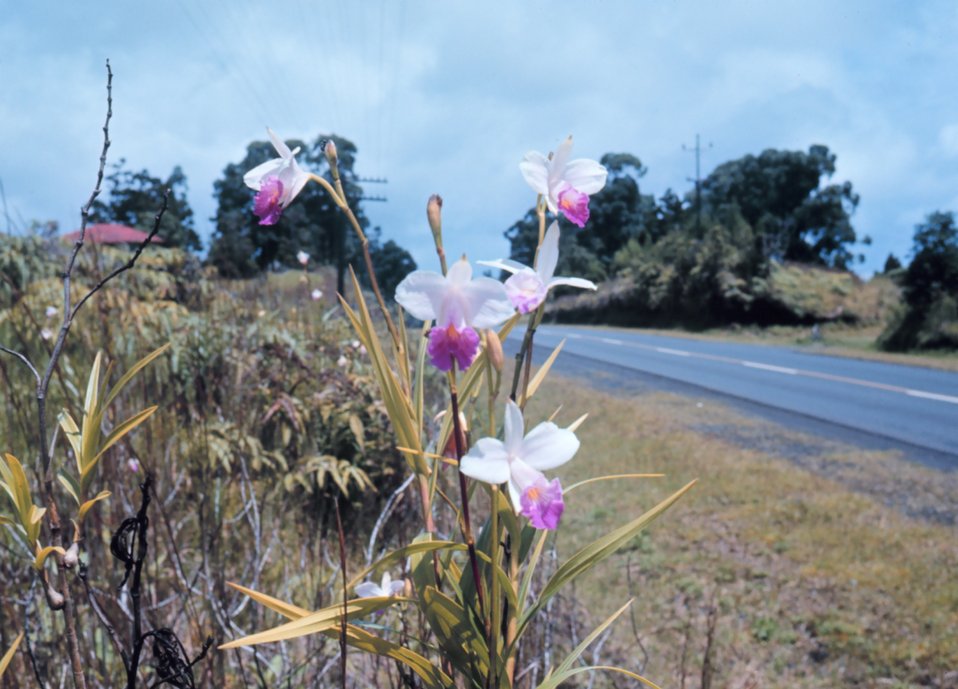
Hawaiian flowers